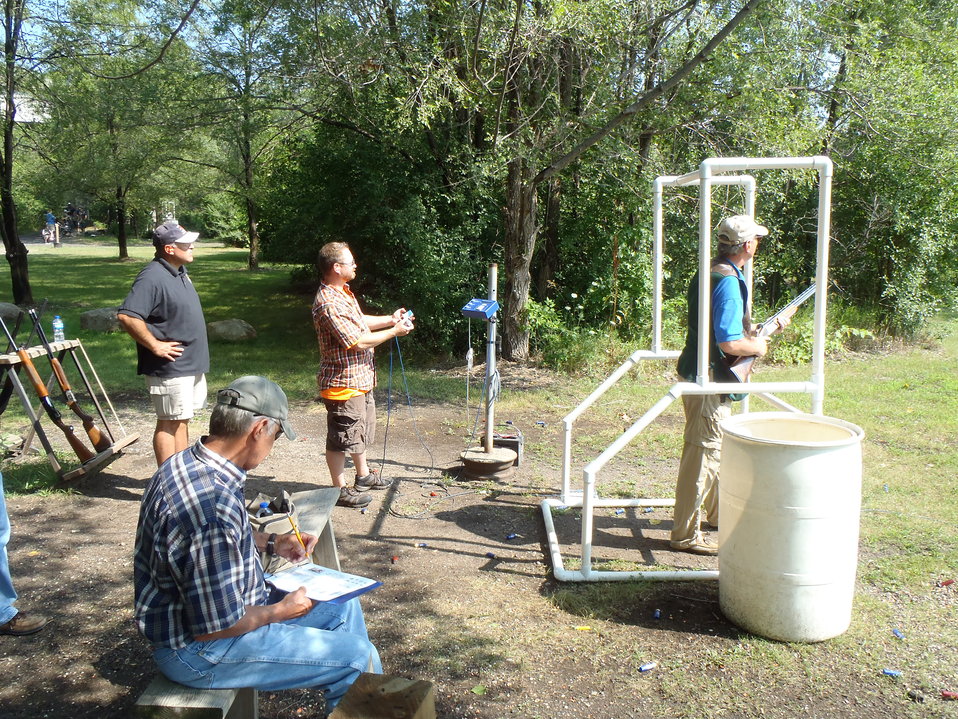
Shooting sports were held in the morning at the South Saint Paul Rod and Gun Club.